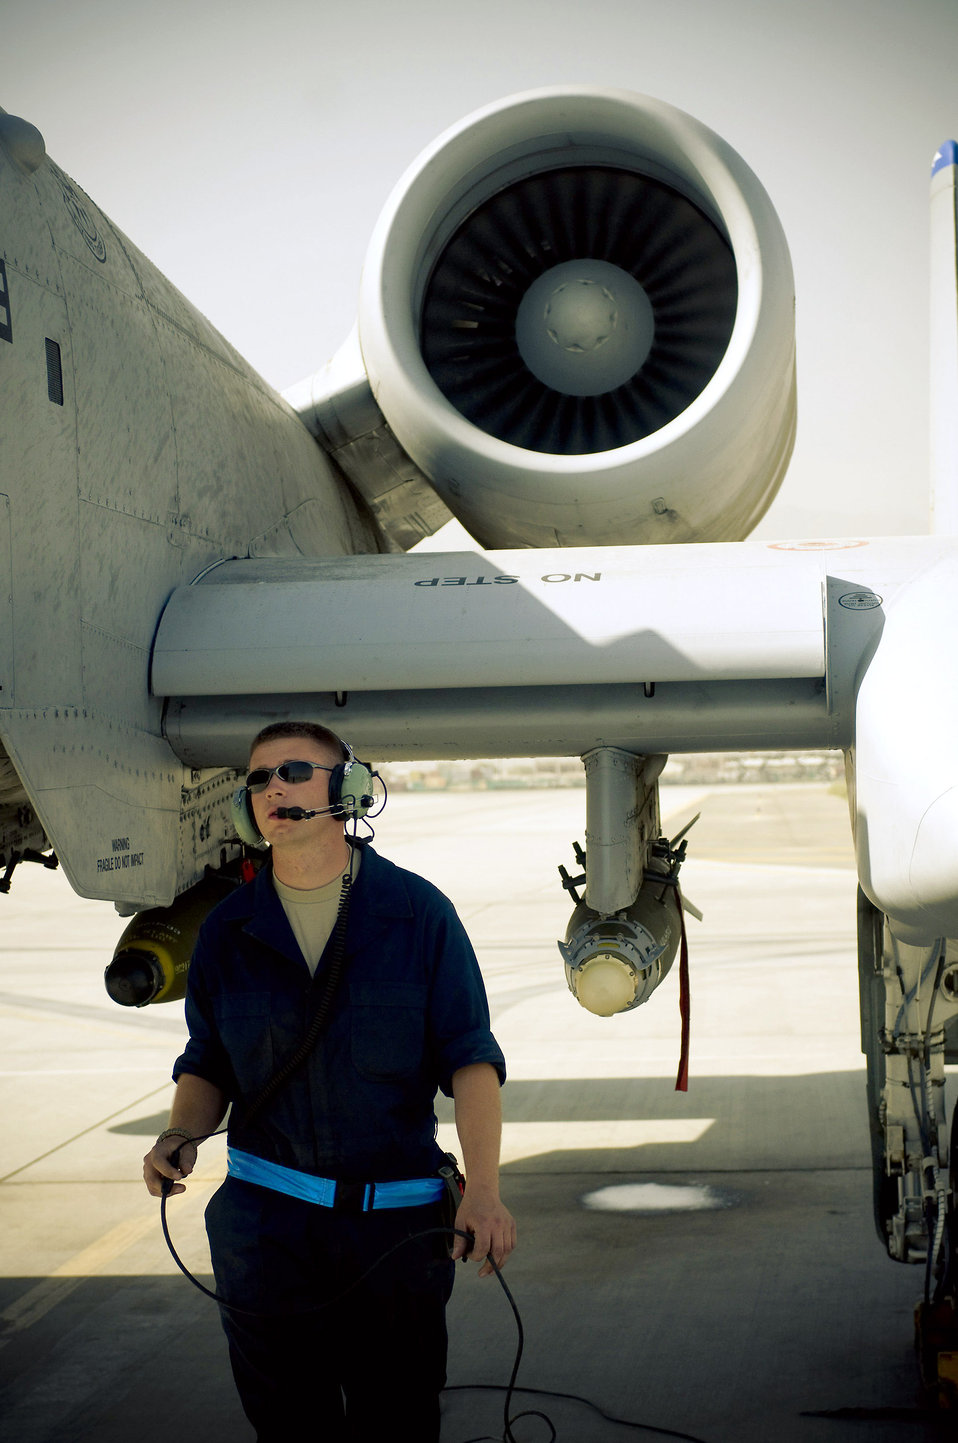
Ready to go

Senior Airman Benjamin Connery walks to the front of an A-10 Thunderbolt II to check the air-refueling door Oct. 18 at Bagram Airfield, Afghanistan. Airman Connery is a 455th Expeditionary Aircraft Maintenance Squadron A-10 crew chief and deployed from Moody Air Force Base, Ga. He is from Cashmere, Wash.